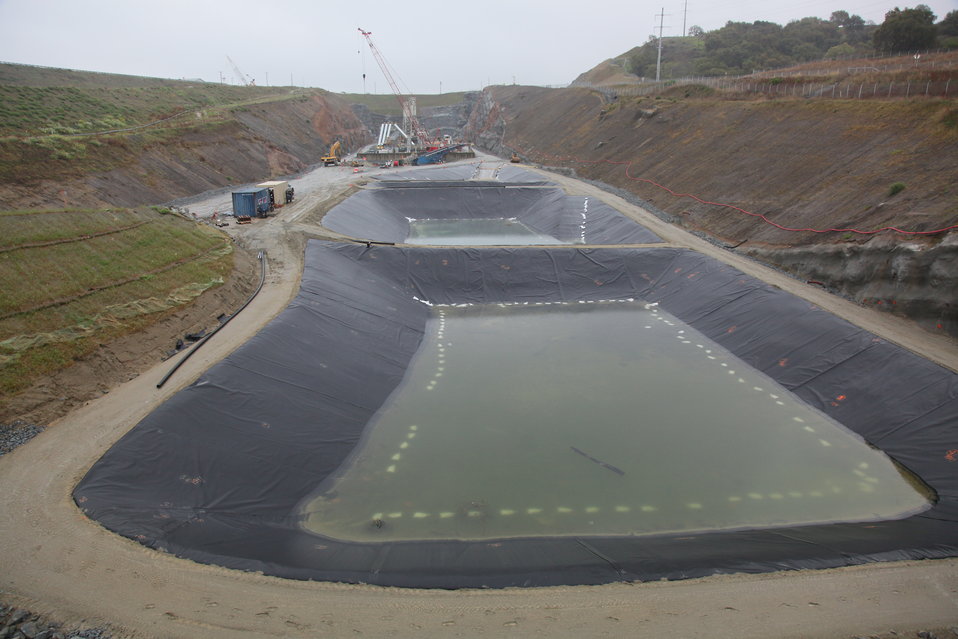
Runoff water treatment ponds

A series of ponds collects runoff water at the excavation site for the Folsom Dam auxiliary spillway in Folsom, Calif., March 15, 2012. The runoff water from the excavation site is treated, monitored and filtered before being pumped into Folsom Lake. The spillway, scheduled to be ready for use in 2017, will allow Folsom Dam to release water sooner and more safely. The project is part of the Folsom Dam Joint Federal Project, a joint effort of the U.S. Army Corps of Engineers Sacramento District, the U.S. Bureau of Reclamation, the Central Valley Flood Protection Board and the Sacramento Area Flood Control Agency to improve the safety of the dam and reduce flood risk for the greater Sacramento area.